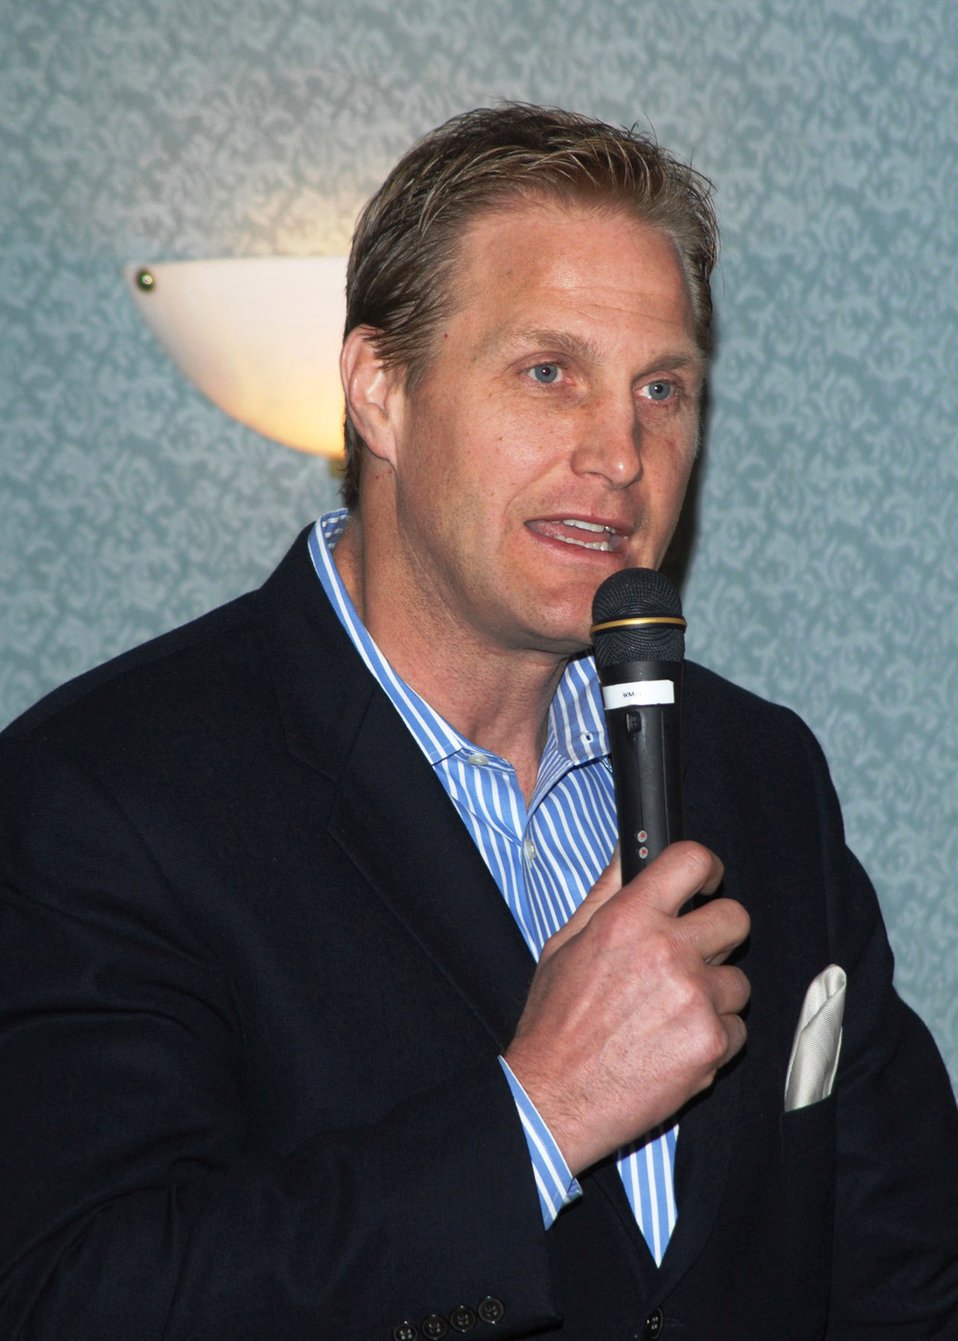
Former pilot, NFL star touts opportunities for veterans

U.S. Air Force Academy graduate and Gulf War veteran Chad Hennings went from flying A-10 Thunderbolt IIs to playing professional football. Now he is an advocate for veterans and small businesses.